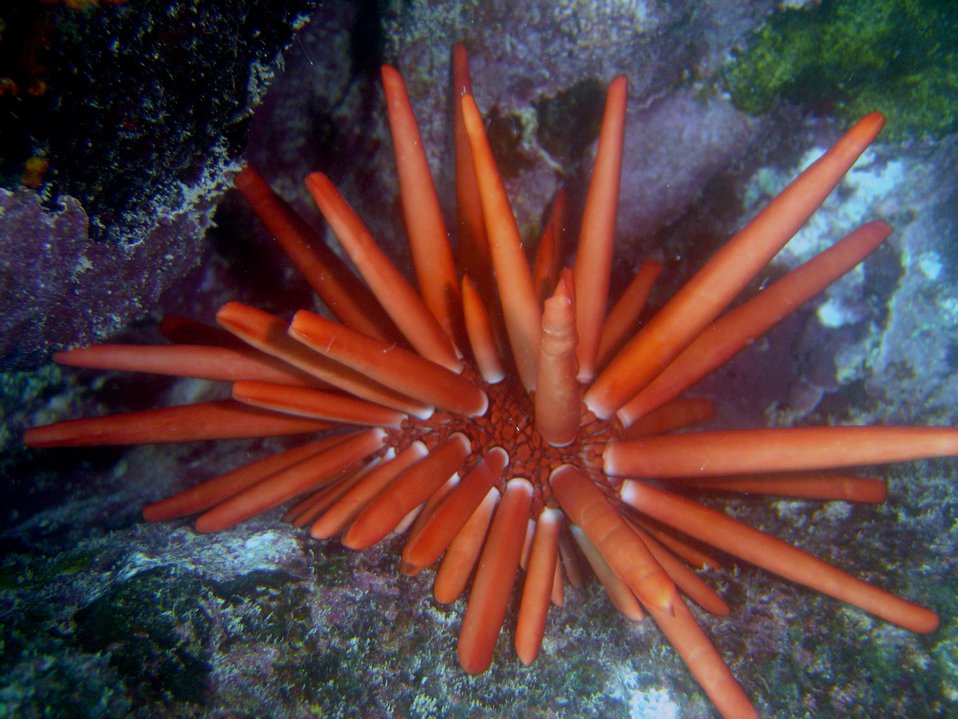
Sea urchin (Heterocentrotus trigonarius)